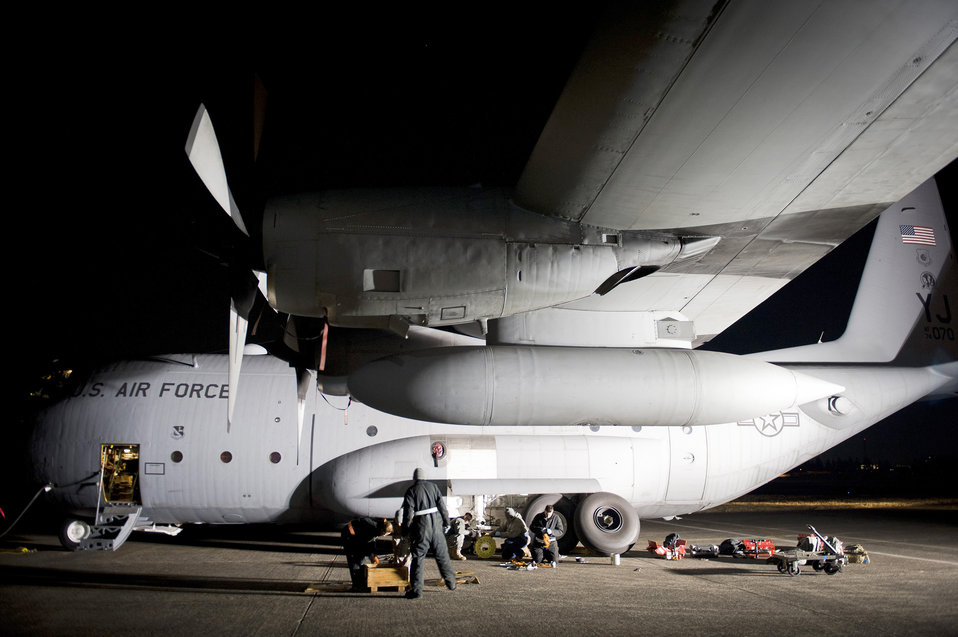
C-130 maintenance

Crew chiefs from the 374th Aircraft Maintenance Squadron perform maintenance on a C-130 Hercules March 31, 2011, at Yokota Air Base, Japan.